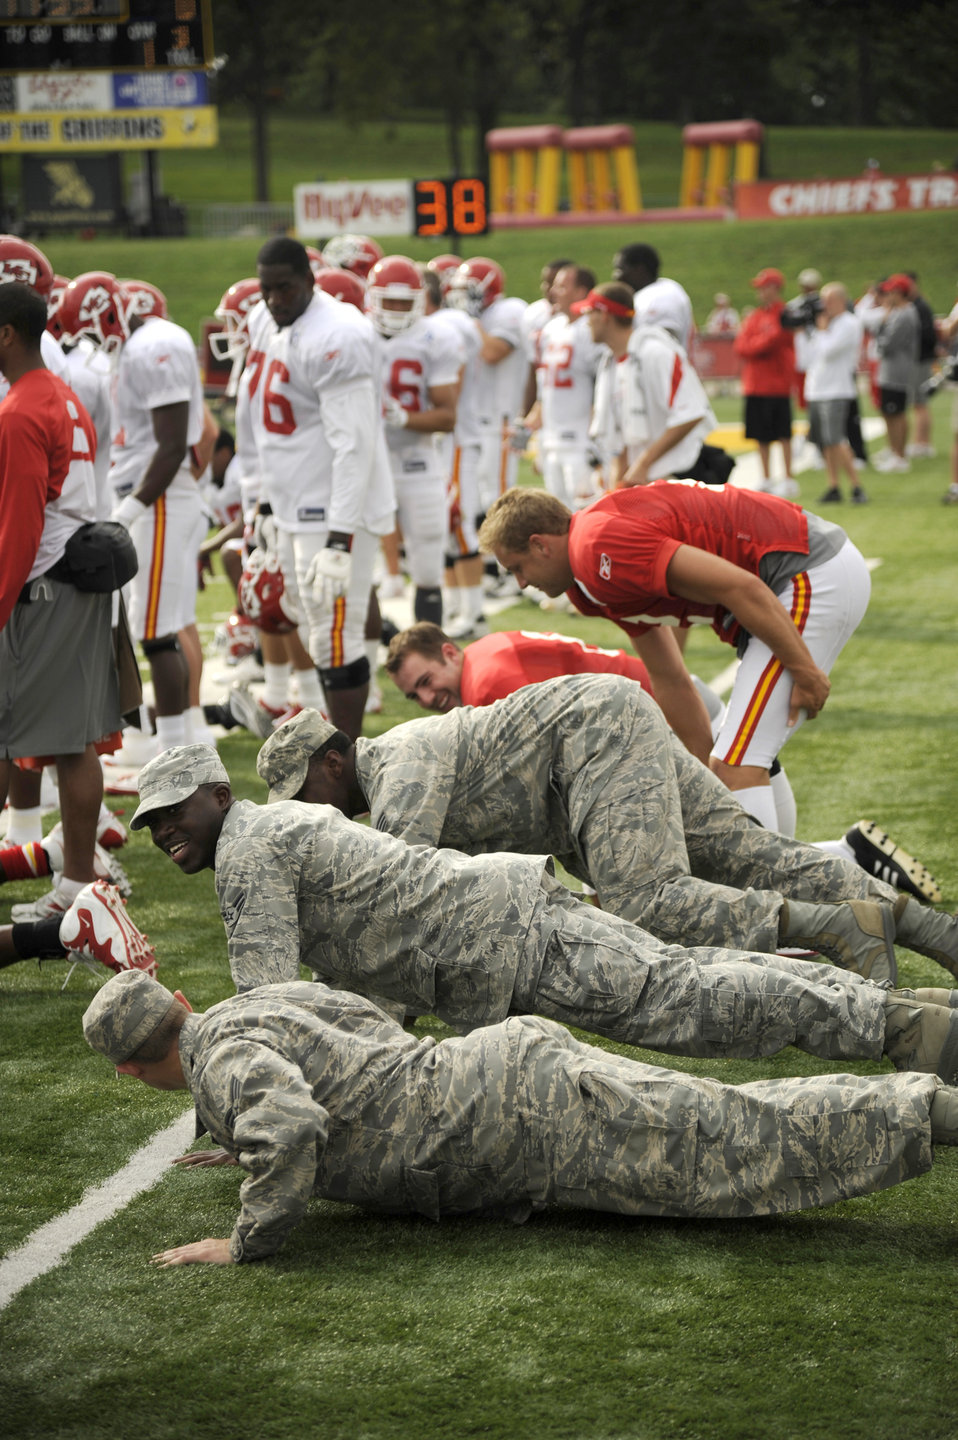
Ready, set ... push

Airmen from Whiteman Air Force Base, Mo., do push-ups with Kansas City Chiefs kickers Aug. 15, 2011, at the football team’s training camp in St. Joseph, Mo. The Airmen were invited to the training camp as part of a USO tour.